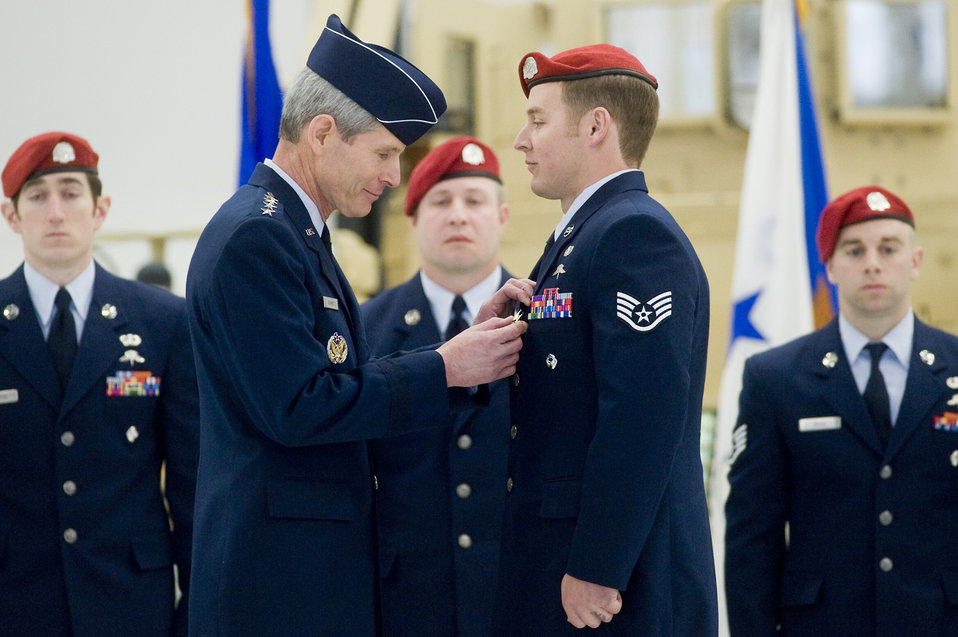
Combat controllers contributions honored in ceremony

Air Force Chief of Staff Gen. Norton Schwartz pins the Silver Star on Staff Sgt. Sean Harvell during a medal ceremony April 29, 2010, at Joint Base Lewis-McChord, Wash. Two Silver Stars, the nation's third highest decoration for valor, were presented to Sergeant Harvell for his actions during multiple firefights with enemy forces in Afghanistan during spring and summer 2007.